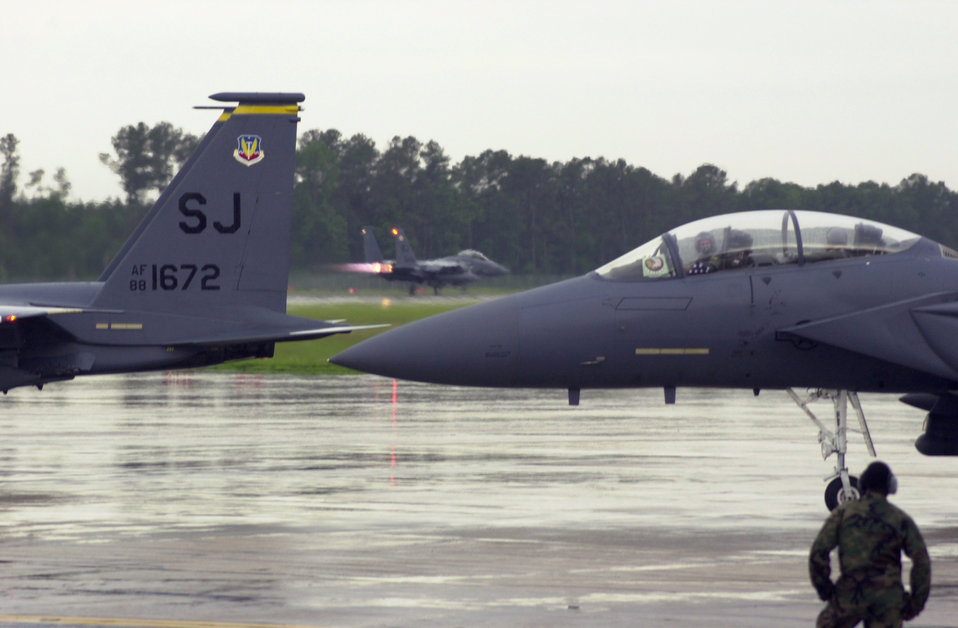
President Ronald Reagan's funeral procession

SEYMOUR JOHNSON AIR FORCE BASE, N.C. (AFPN) -- F-15E Strike Eagle pilots from the 4th Fighter Wing here prepare to takeoff for Washington to perform a 21-ship flyover and a missing-man formation tribute for former President Ronald Reagan's funeral procession.